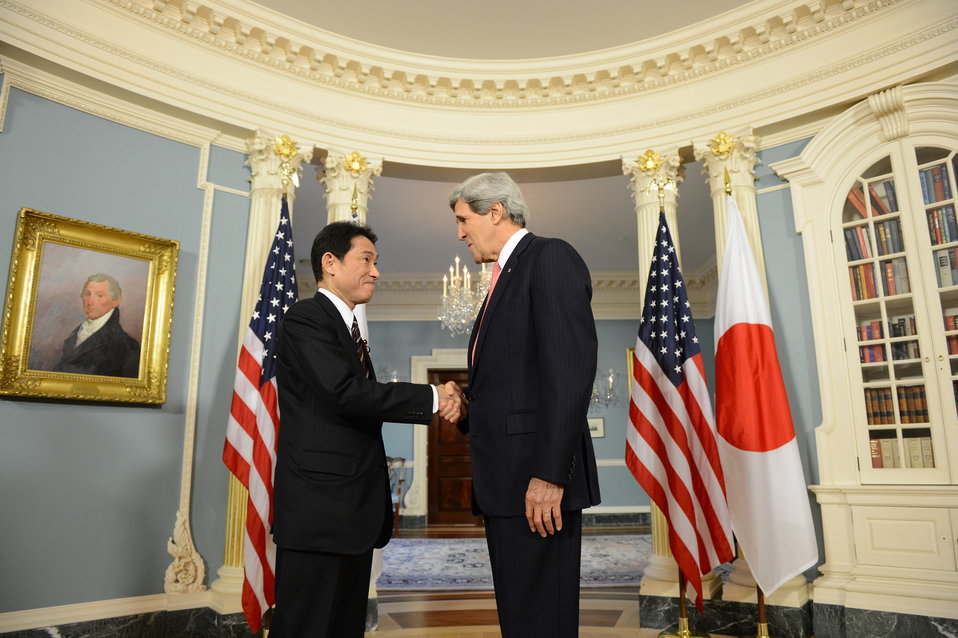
Secretary Kerry Meets With Japanese Foreign Minister Kishida

U.S. Secretary of State John Kerry shakes hands with Japanese Minister of Foreign Affairs Fumio Kishida after their bilateral meeting at the U.S. Department of State in Washington, D.C., February 22, 2013.